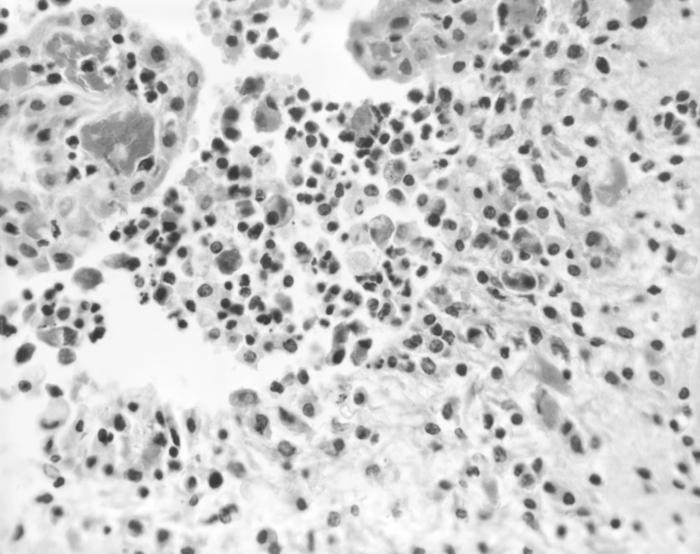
Magnified 500X, this 1973 photomicrograph depicted a mouse brain tissue specimen stained using the hematoxylin and eosin (H&E) staining technique, and revealing the presence of Acanthamoeba polyphaga protozoa.Acanthamoeba is a microscopic, free-living ameba commonly found in the environment that can cause rare but severe illness. Acanthamoeba causes three main types of illness involving the eye (keratitis), the brain and spinal cord (Granulomatous Amebic Encephalitis), and infections that can spread from an entry point to the entire body (disseminated disease).